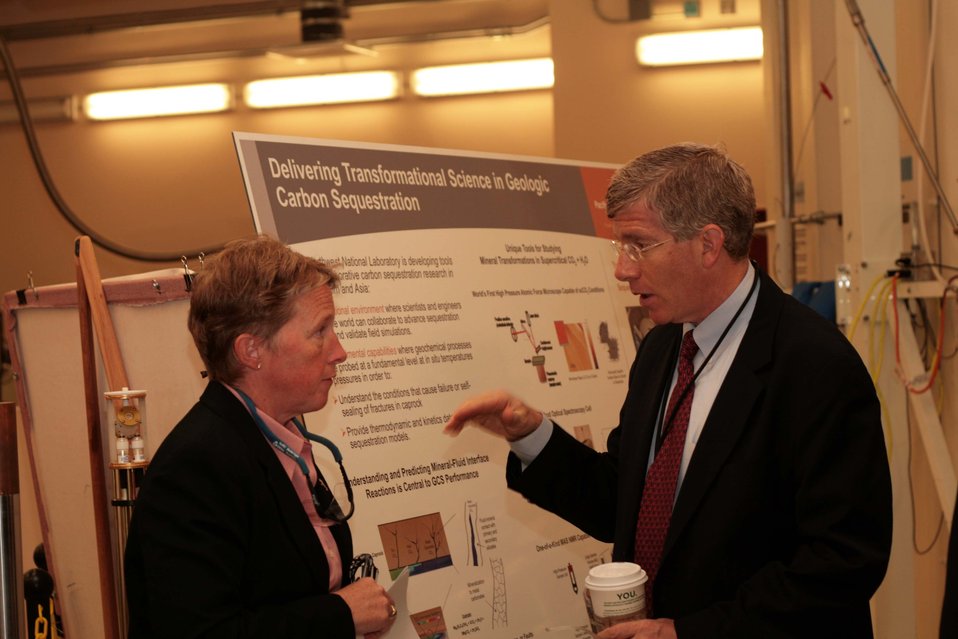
P-16